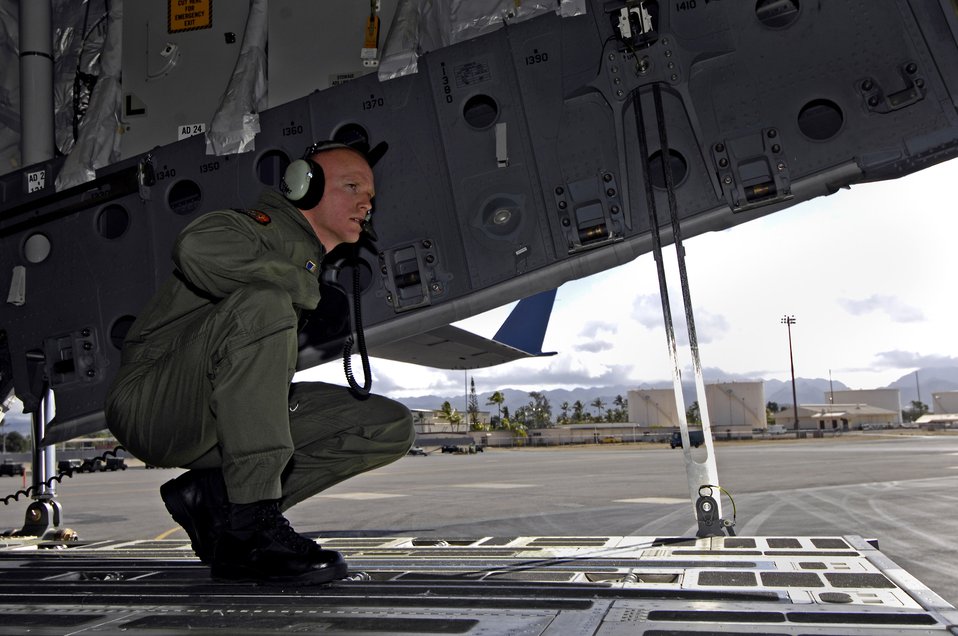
Hickam crew prepares for AMC Rodeo

Tech. Sgt. Ansen Lucas helps direct the backing of a C-17 Globemaster III June 22 at Hickam Air Force Base, Hawaii. Sergeant Lucas is a loadmaster with the 535th Airlift Squadron and practicing for the upcoming 2007 Air Mobility Command Rodeo.